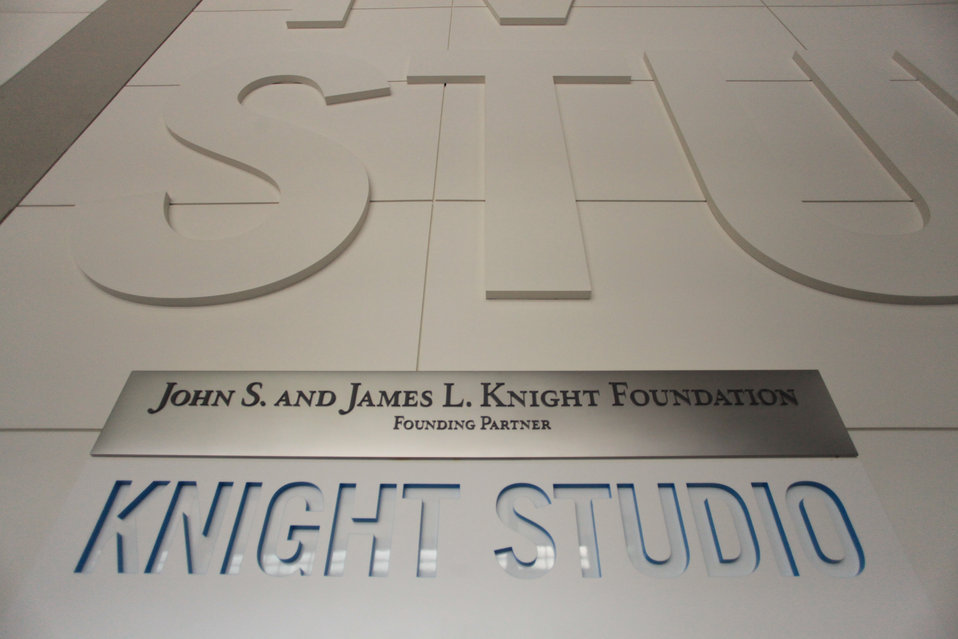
Knight Studio at the Newseum

February 1, 2012.